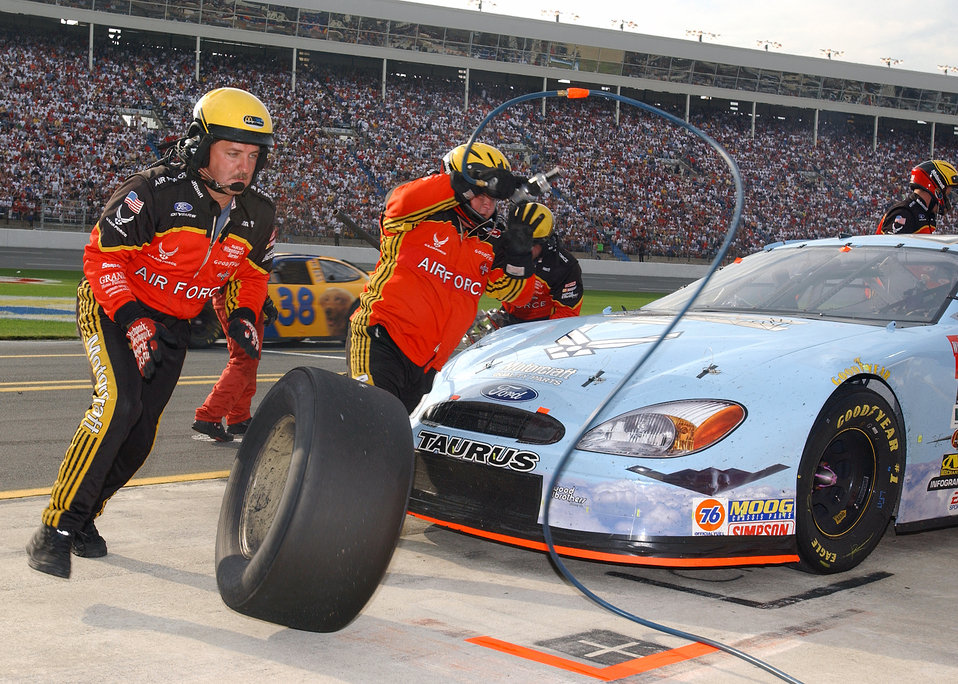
Pit stop

Charlotte, N.C. -- The Wood Brothers Racing Team executes a fast pit stop on the Air Force Centennial race car during the running of the Coca-Cola 600 at Lowe's Motor Speedway on May 25, 2003. The Centennial of flight paint scheme was in honor of 100 years of powered flight.